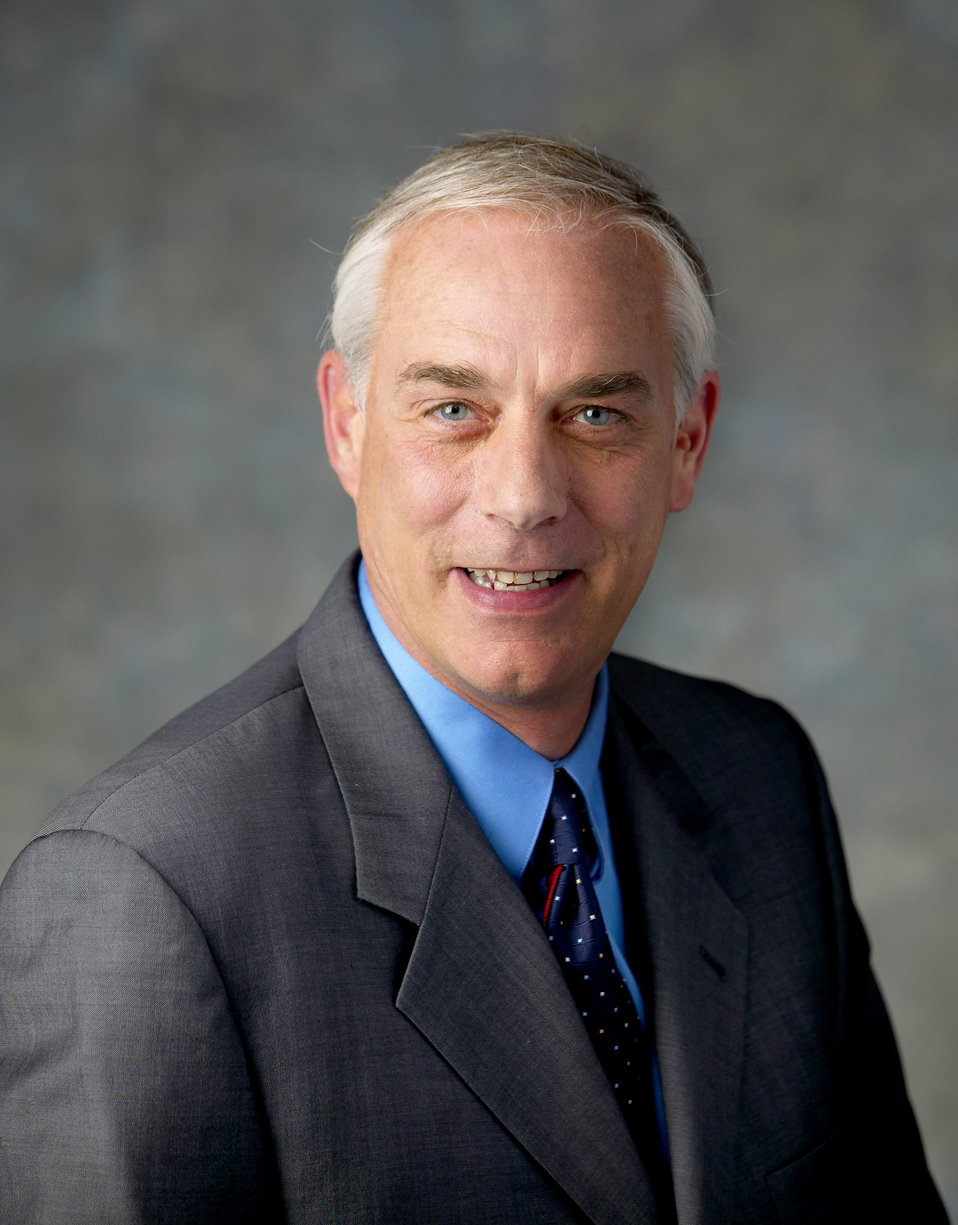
Roberto Padovani